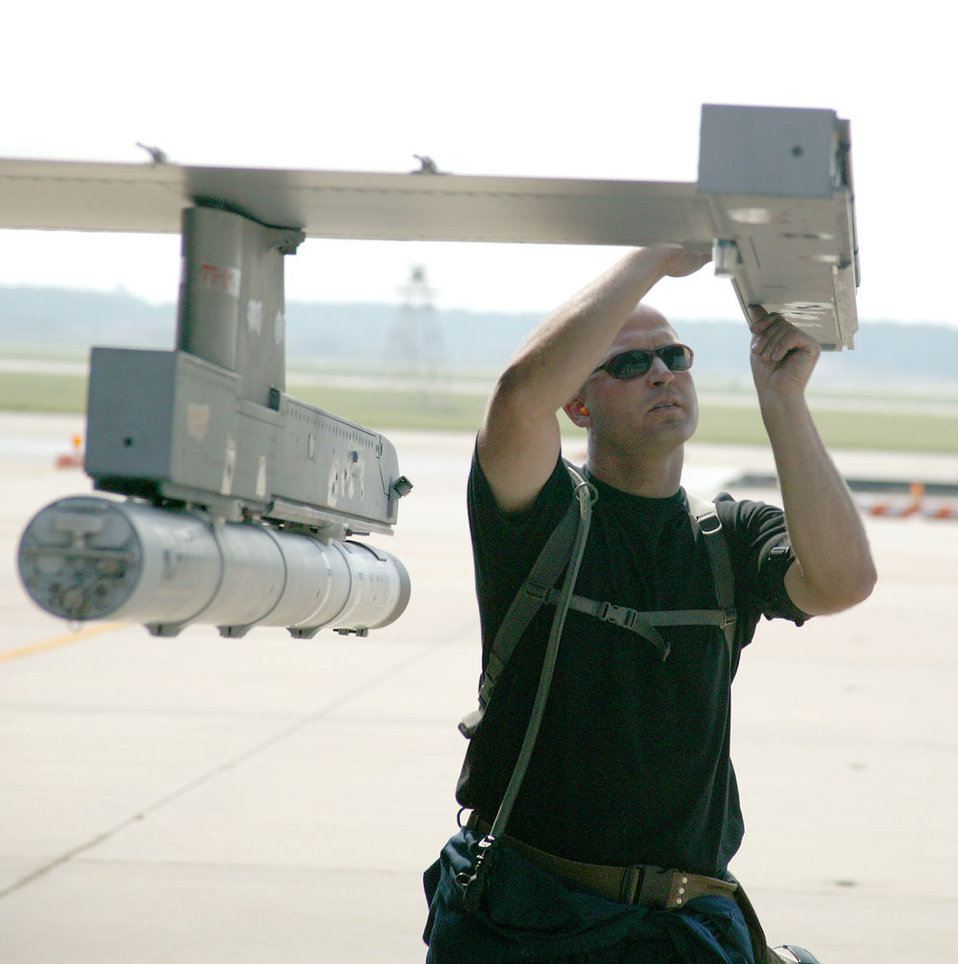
Shaw hosts Operation Iron Thunder

Staff Sgt. Jason Leader inspects an F-16 Fighting Falcon at Shaw Air Force Base, S.C., on July 17 as part of Operation Iron Thunder. Sergeant Leader is a weapons team chief with the 77th Aircraft Maintenance Unit.